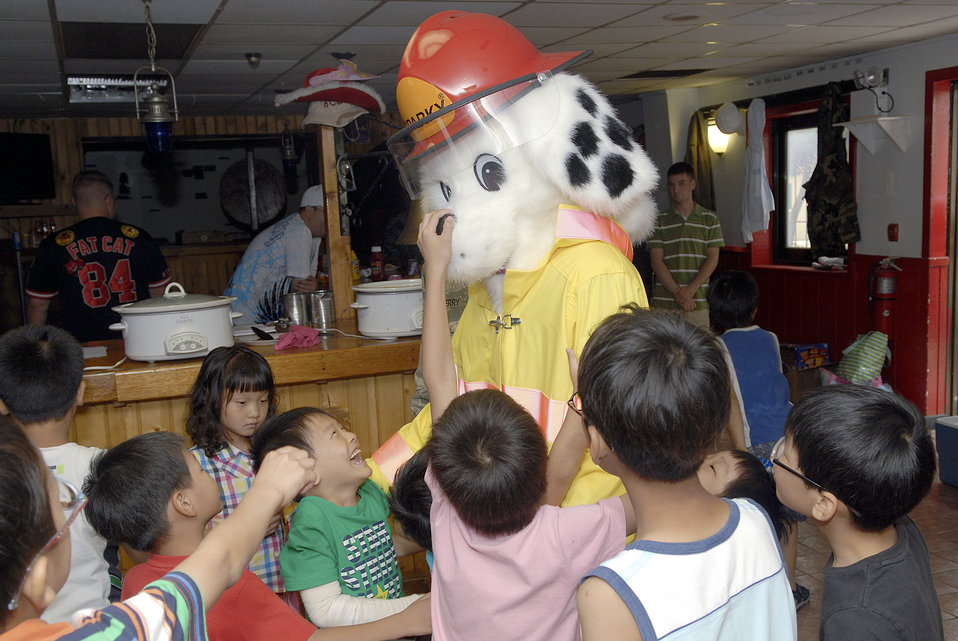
Kunsan Kid's Day

Sparky the Fire Dog visits with children from the Il Mag Won Orphanage during a kid's day July 24, 2010, at Kunsan Air Base, South Korea.